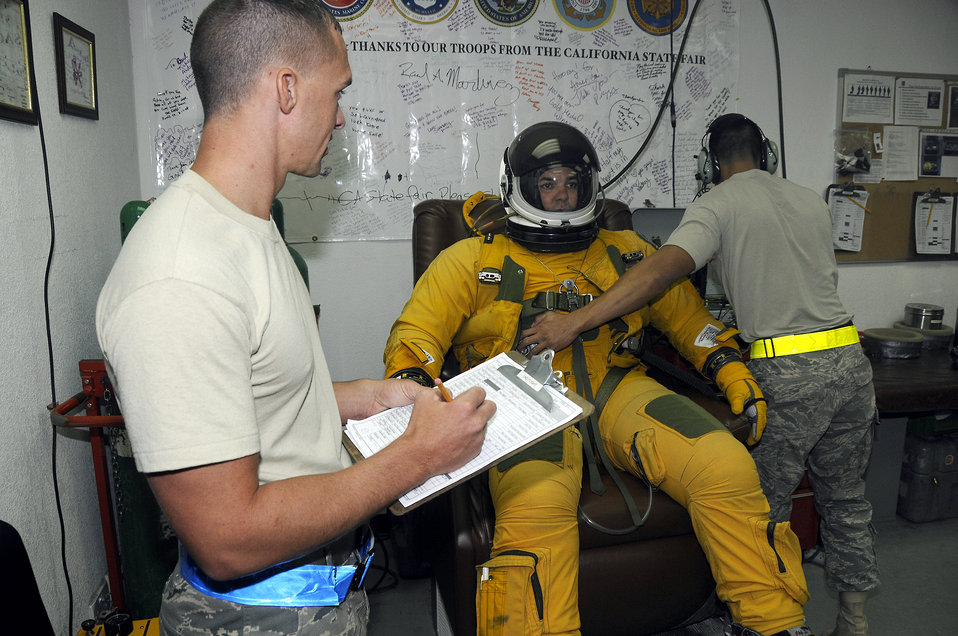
Prepping for high flying

Senior Airman Allen Smith and Senior Airman David Sivixay test and verify Lt. Col. Brian Dickinson's full-pressure flight suit Nov. 14. Both are with the 99th Expeditionary Reconnaissance Squadron physiological support division at an air base in Southwest Asia. Colonel Dickinson is a U-2 Dragonlady pilot with the 99th and is responsible for gathering intelligence in the area of responsibility in support of operations Iraqi and Enduring Freedom.